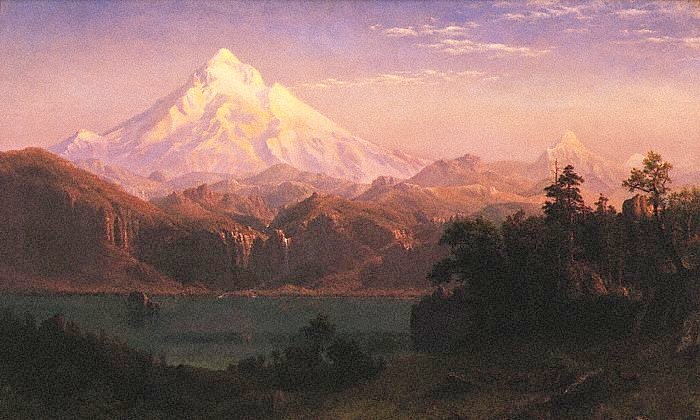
MountHoodBierstadt